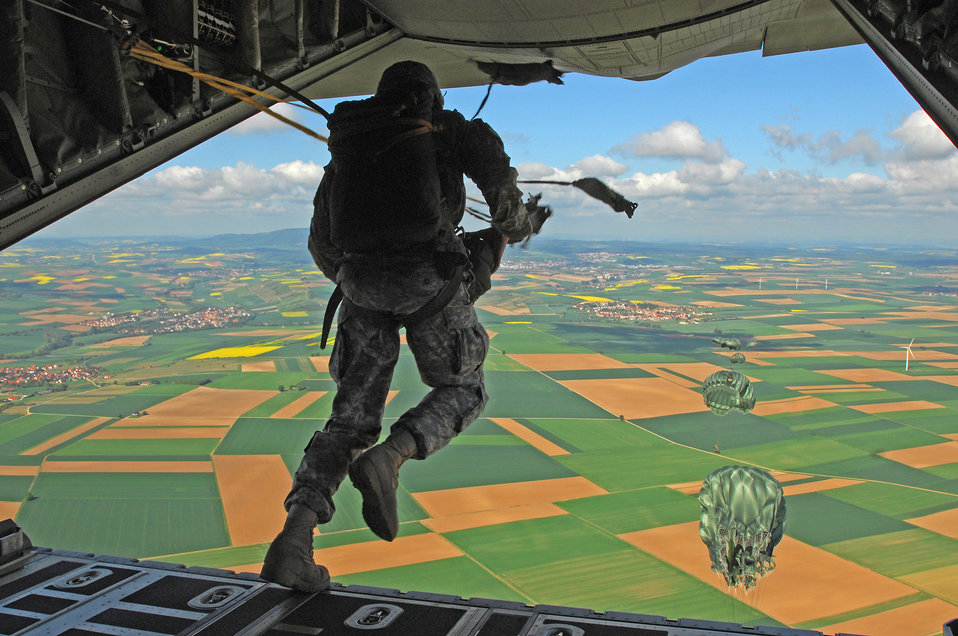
Airmen, Soldiers make first jump from Ramstein C-130J

Airmen and Soldiers jump from the tail gate of a new C-130J Super Hercules during the first Ramstein Air Base, Germany, C-130J personnel drop over southern Germany May 4.